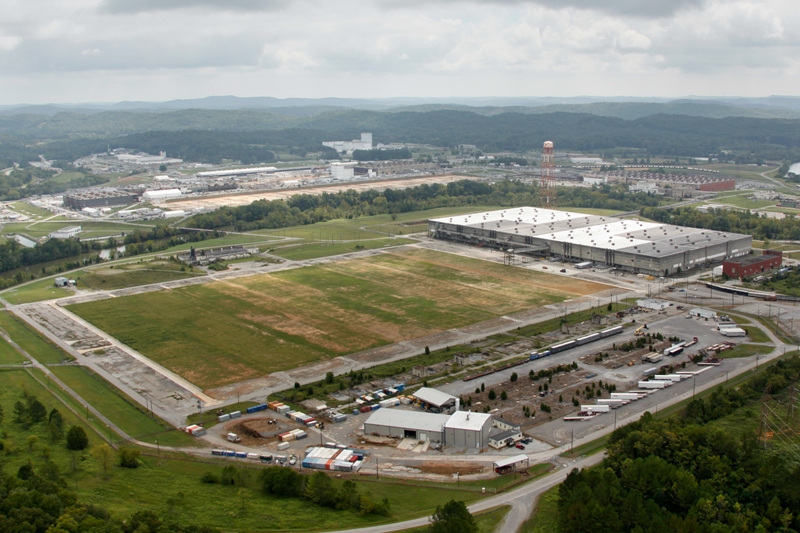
Former K-33 area

September, 2012

The grassy lot, at Oak Ridge’s East Tennessee Technology Park, once contained the 32-acre K-33 Building. The facility was constructed in 1954 and enriched uranium until 1985. The final phase of the EM project was completed in July 2012.